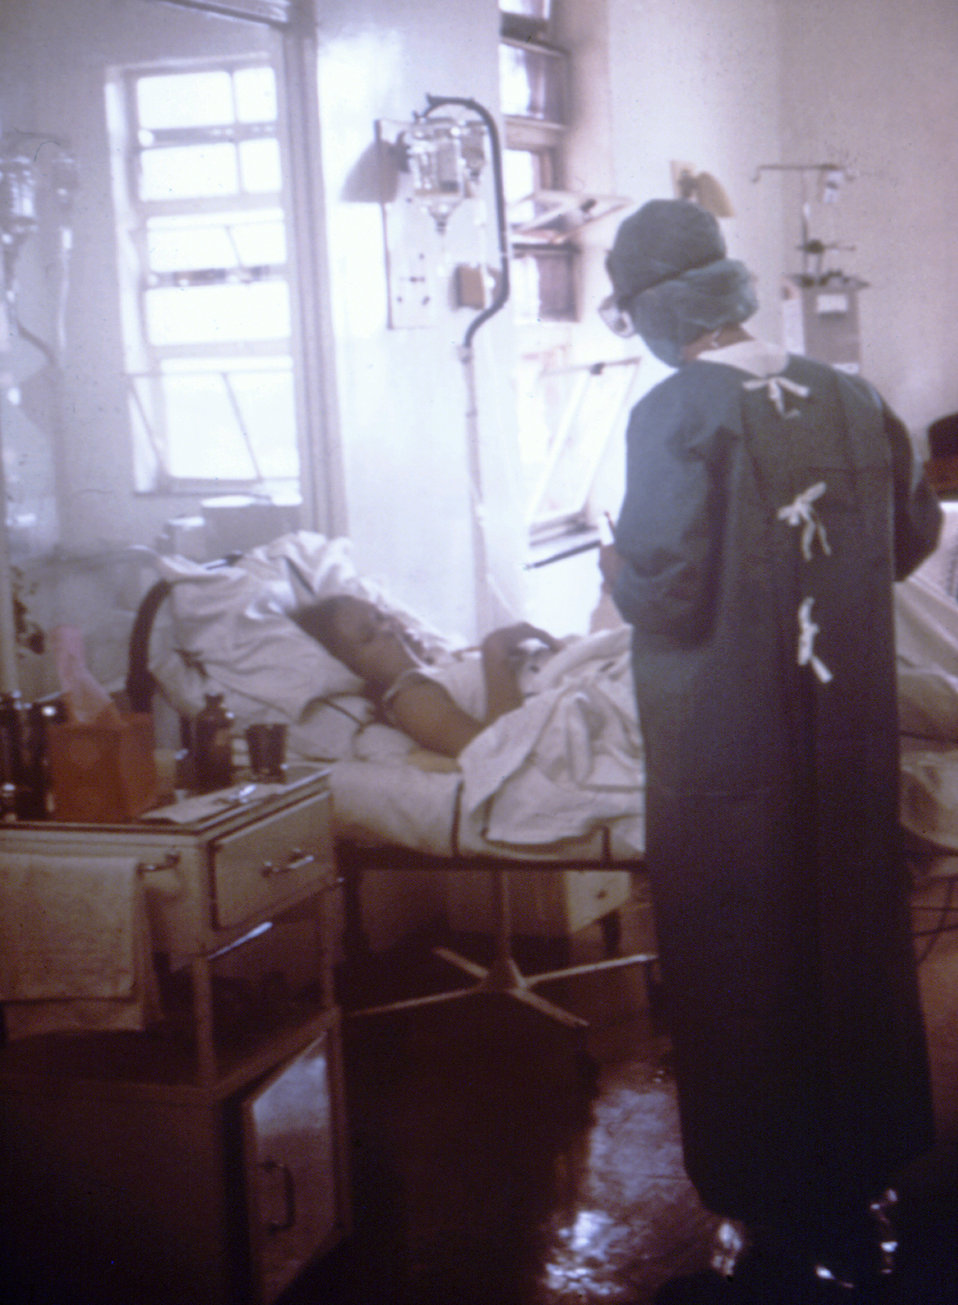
This 1975 photograph showed a Marburg virus patient (case #2) in an isolation room in Johannesburg, South Africa.